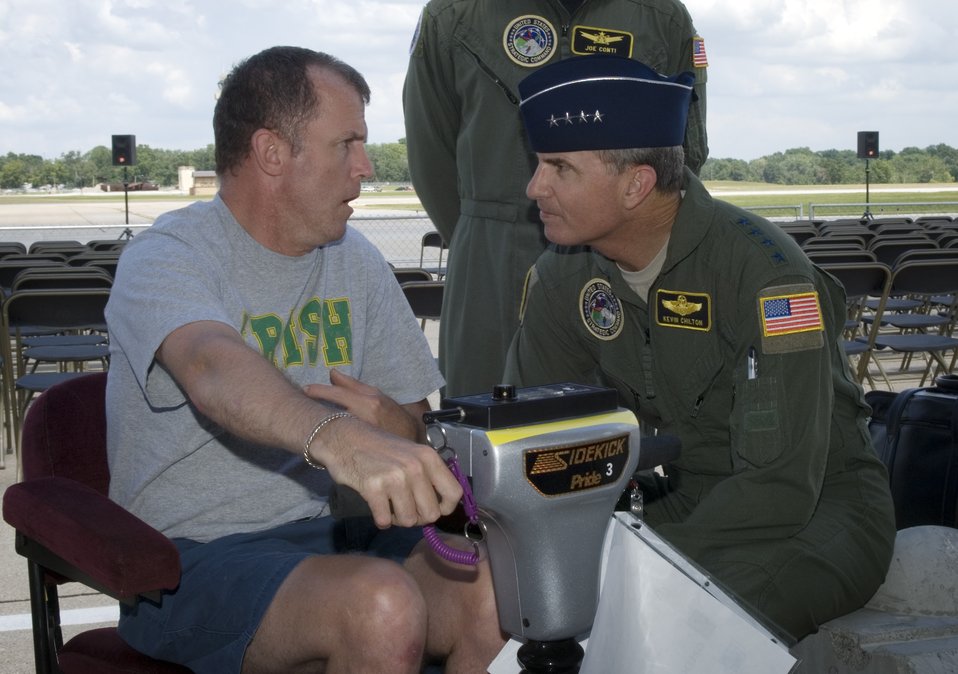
Offutt Airmen hold airshow

David Clark (left) chats with Gen. Kevin P. Chilton during a special needs airshow Aug. 15 at Offutt Air Force Base, Neb. Mr. Clark was injured when he was serving in the Army as a sergeant first class. General Chilton is the commander of U.S. Strategic Command.